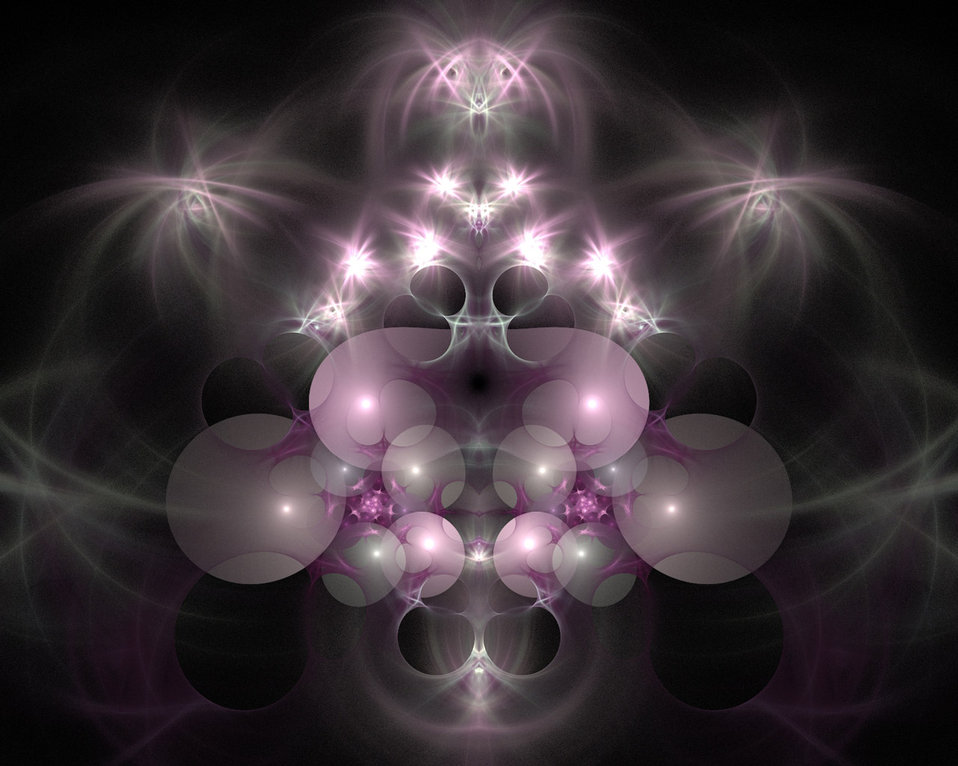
Pink and lavender lights

Fractal in pink and lavender.